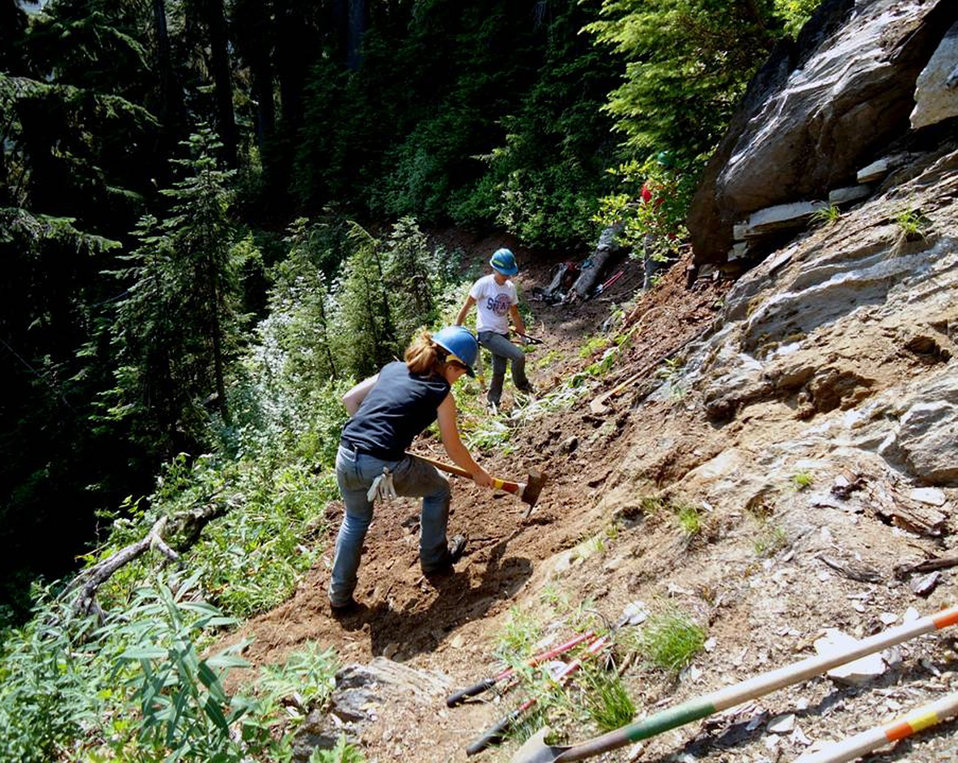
Summer Jobs R6 019

College students Amy Merrit of Oso, WA and Kim Woodward of Darrington, WA work on maintaining the Pacific Crest Trail on the Mt. Baker-Snoqualmie National Forest in Washington. The U.S. Forest Service and its conservation partners hire more than 3,000 people annually for summer positions that involve work such as reducing the impacts of climate change on the nation’s natural resources, empowering Native American communities, building trails, enhancing wildlife habitat, and improving and restoring cultural and historic landmarks.